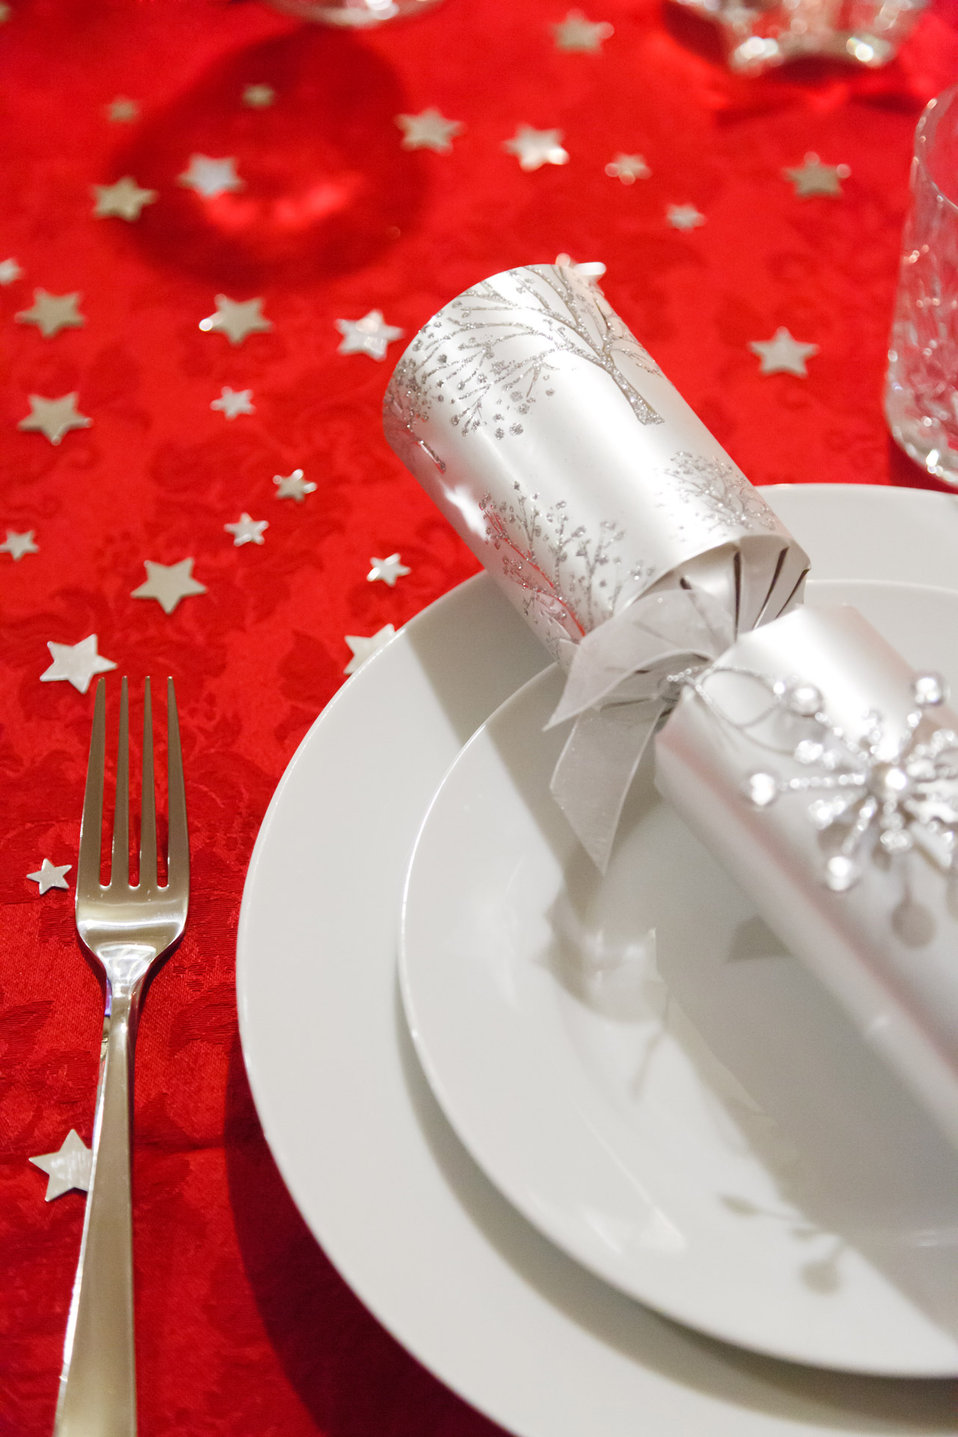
Christmas dining

A festive red and silver christmas table setting.